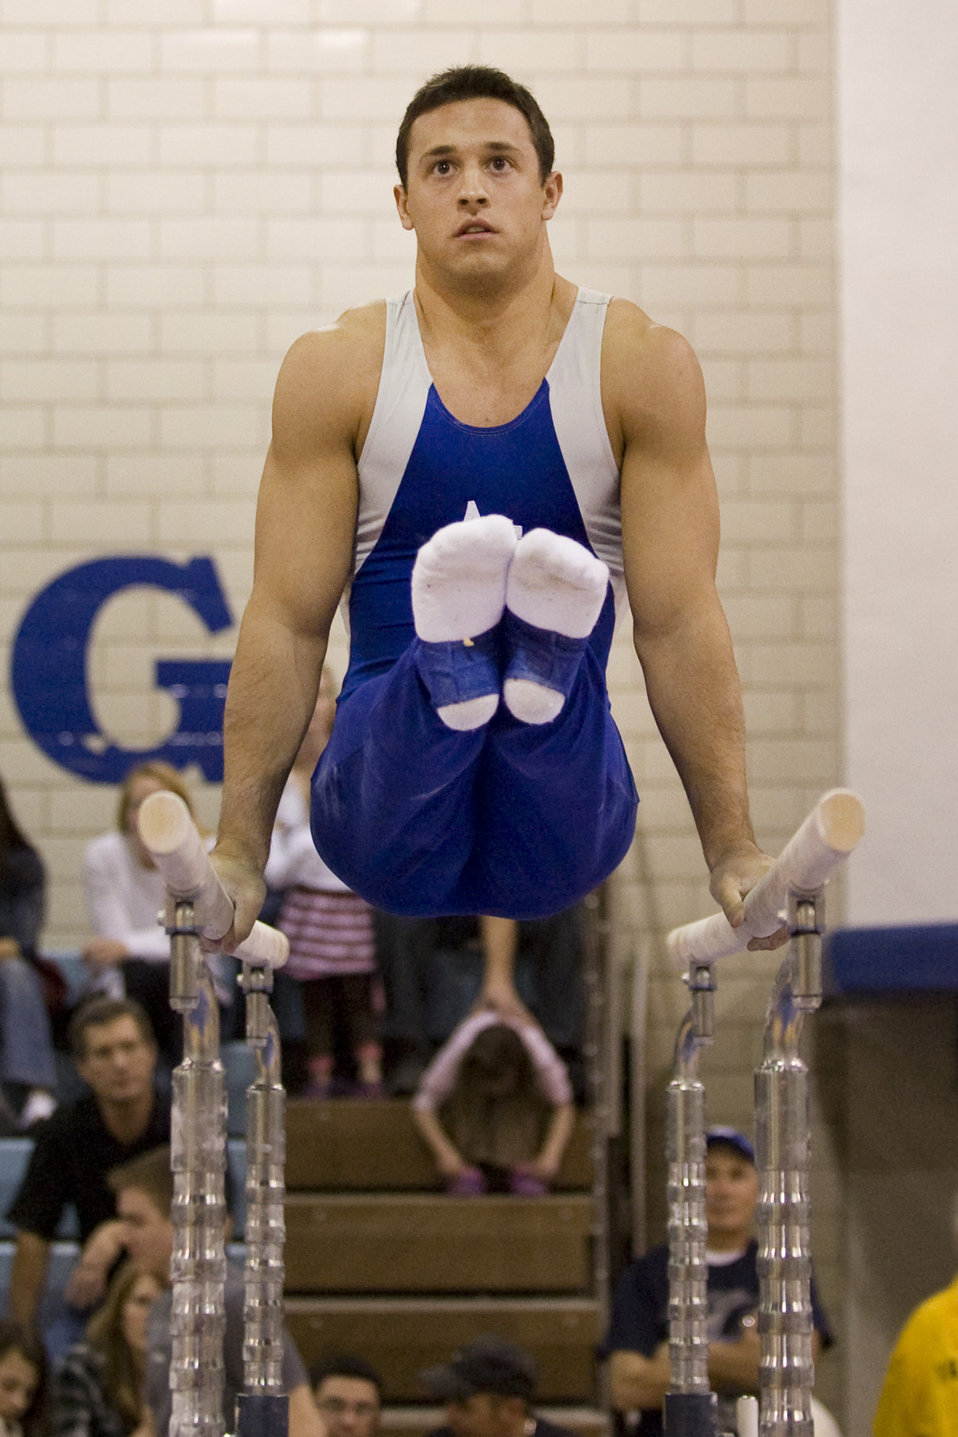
Falcons open season with Rocky Mountain event

Falcon junior Dan Klimkowski performs on the parallel bars during the Rocky Mountain Open meet held held in the field house at the U. S. Air Force Academy, Colo., Jan. 16, 2010. This was the first meet of the season hosted by the 14th-ranked Falcons.